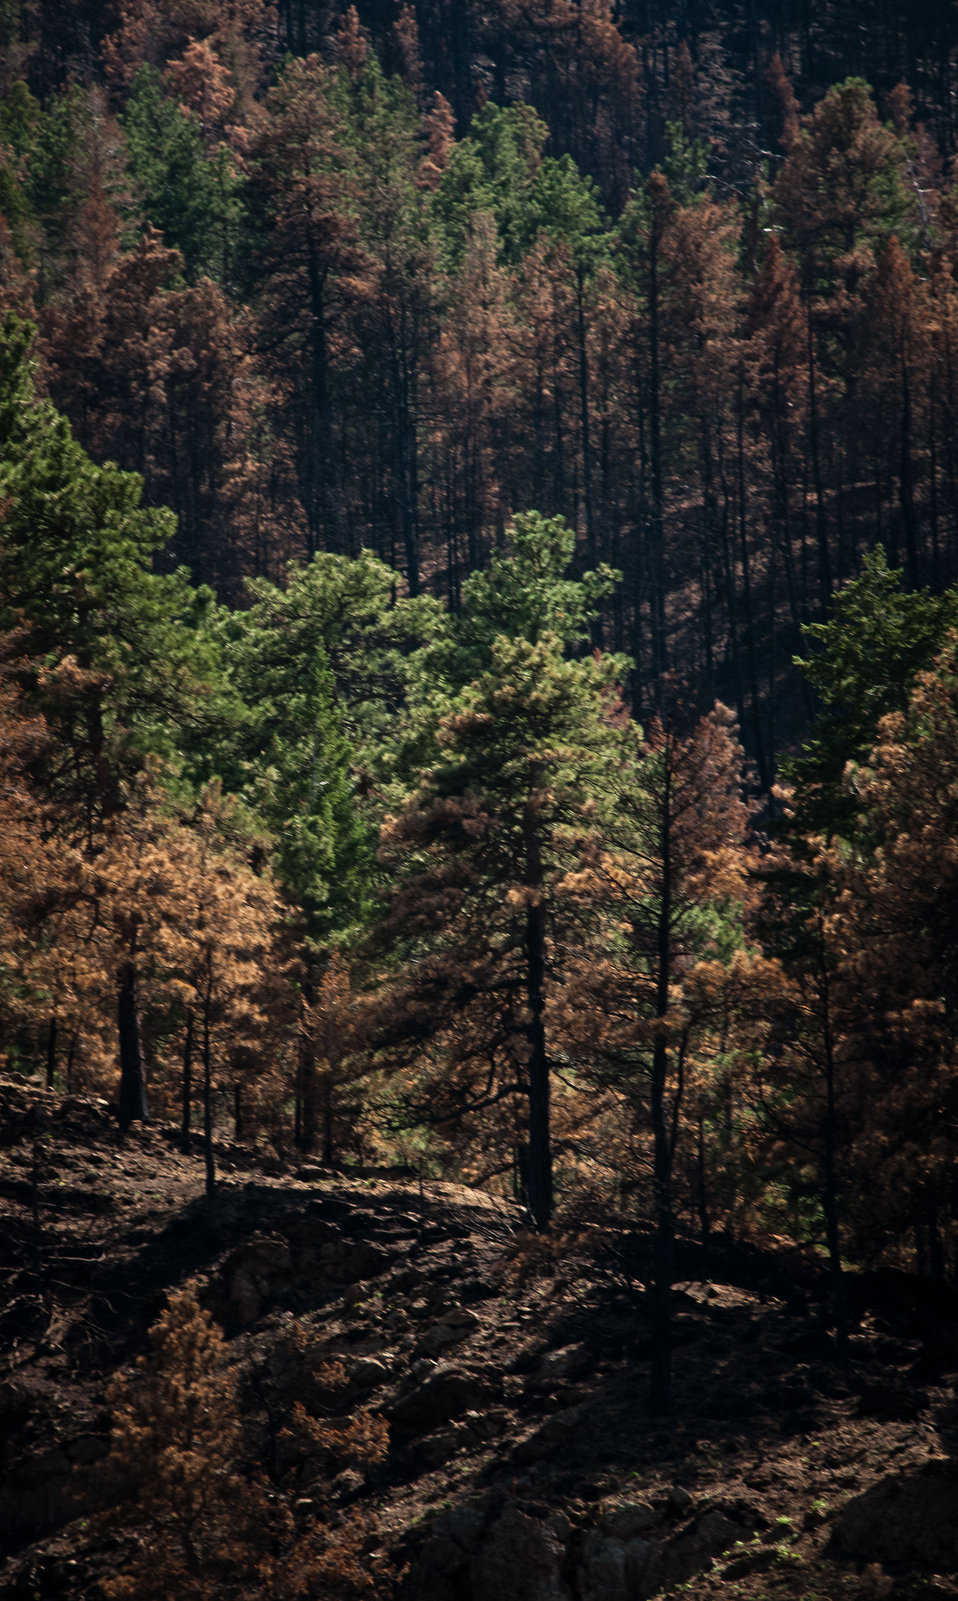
The aerial application of yellow straw continues to mitigate soil and ash runoff from the mountainous terrain leading to Milton L. Seaman Reservoir, drinking water resource for the City of Greeley, on Friday, July 20, 2012, near Fort Collins, Colo. Red areas are burnt trees with pine needles that will fall tho the ground and form a mulch. Green areas are the remaining healthy trees that provide shade and protection to promote the growth of ground cover plants and shrub. Because of steep terrain, helicopters must be used to quickly deliver 1,800 tons of straw to Forest Service lands, and private and other lands that receive a seed mix and straw to promote ground cover plant growth on ash-covered lands. In total, 1,800 tons of straw will be applied during the 14-day operation. One quarter of the cost was paid by the City of Greeley and the U.S. Department of Agriculture funded the remainder. The Hewlett Gulch Fire was started by a camper’s alcohol stove, on May 14, at the saddle of a picturesque mountain ridge along the Hewlett Gulch Trail of Poudre Canyon, in the Roosevelt National Forest, 60 miles north of Denver. At it’s peak, more than 400 firefighters were battling fires being pushed by 50 mph winds that helped blacken over 12-square-miles of dry ground cover, brush and trees. Many of the trees were already dead and tinder dry from beetle-kill. The water in the reservoir remains clean and clear, while downstream water flow has gone from famous Colorado clear water to nearly black flows of water heavily laden with ash, silt, and burnt debris that recent thunderstorms have already washed down from the mountainsides.